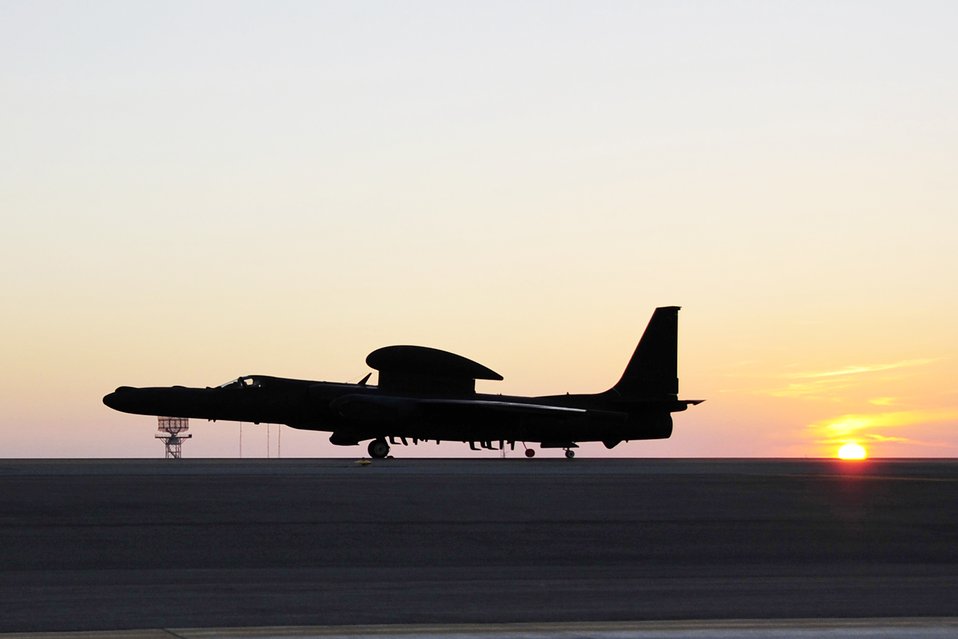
Ready for rest

A U-2 assigned to the 380th Air Expeditionary Wing taxis down the runway at an air base in Southwest Asia Dec. 30, 2009, after completing a mission. The U-2 provides high-altitude, all-weather surveillance and reconnaissance, day or night, in direct support of U.S. and allied forces.